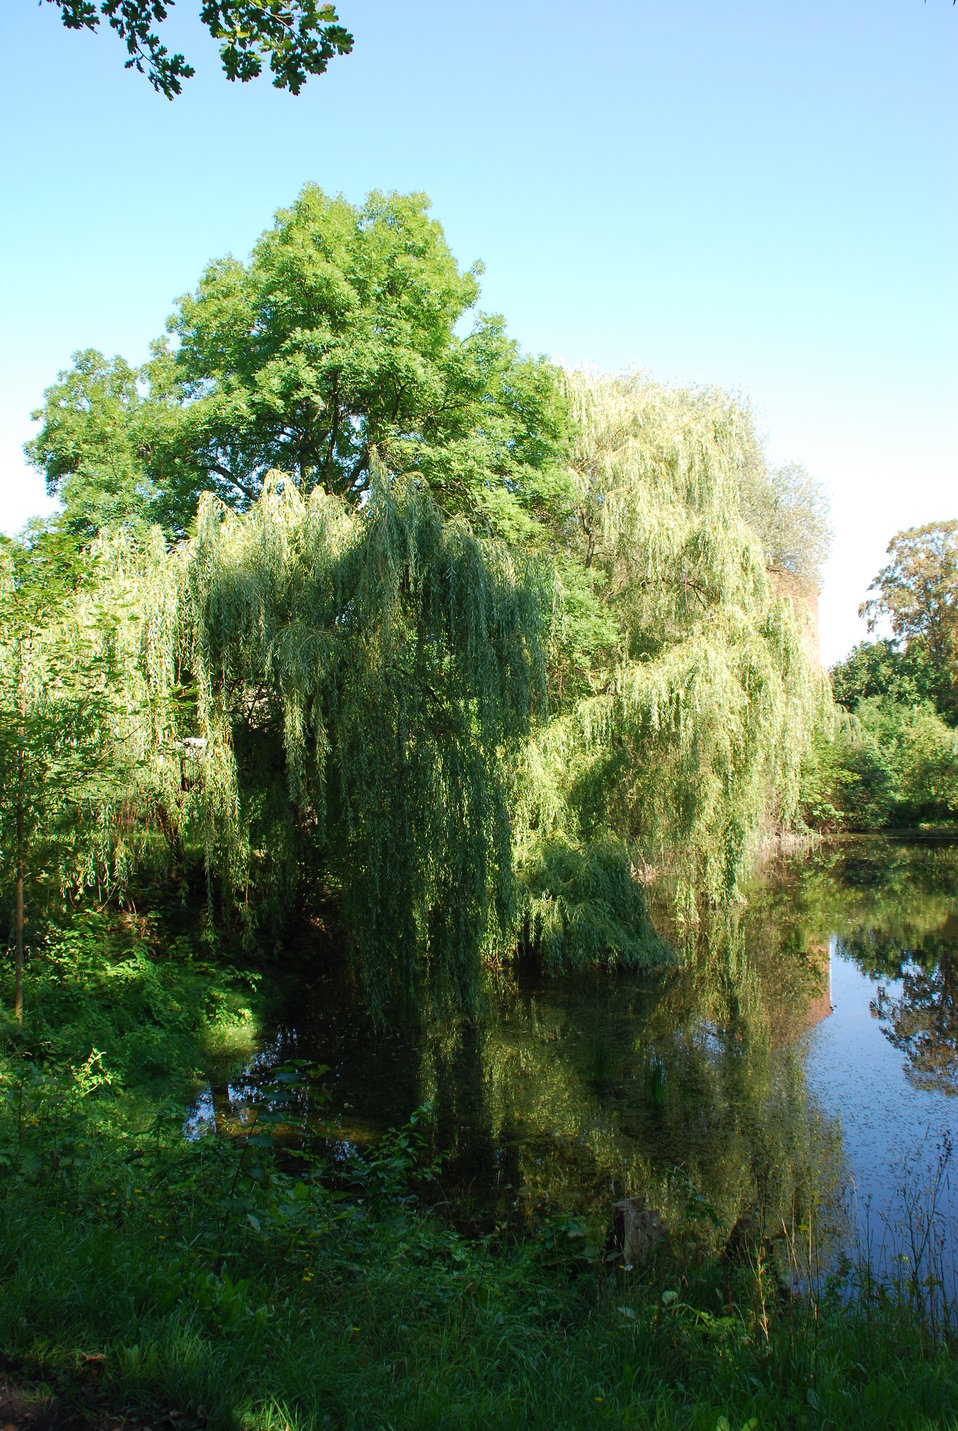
Theaterteich in Frankfurt (Oder), am ehemaligen Kleist-Theater, Friedrich-Ebert-Straße